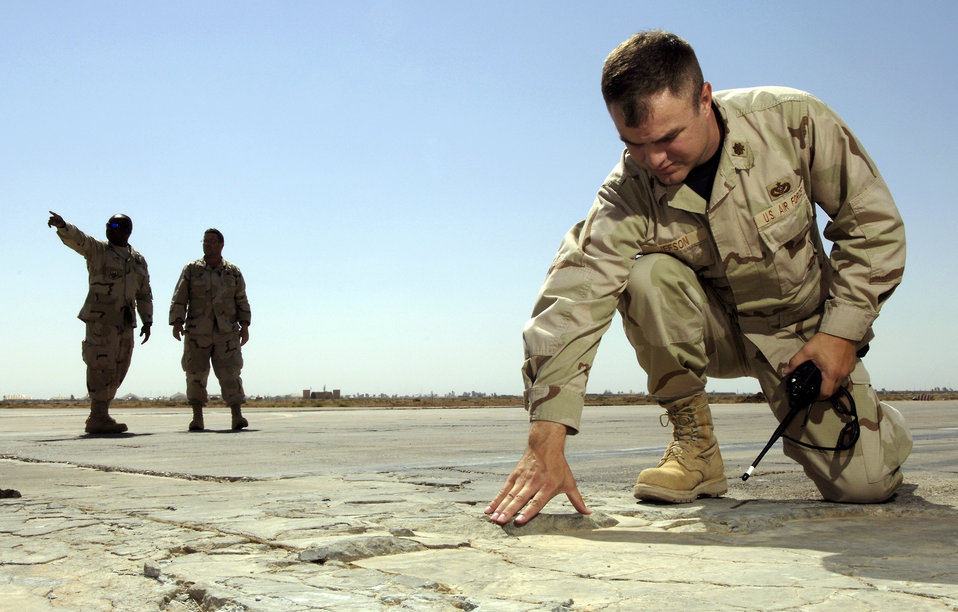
Runway repair reduces FOD at Balad

Maj. Matthew Jefson inspects a cracked and damaged section of runway at Balad Air Base, Iraq, on Friday, May 19, 2006. The Air Force along with contractors and the U.S. Army Corps of Engineers are working to replace the section of runway. The extensive damage was causing the runway to break apart and create foreign object debris. More than 1,000 meters of the runway will be replaced. Major Jefson is a project manager for the U.S. Central Command Air Forces' construction management office.